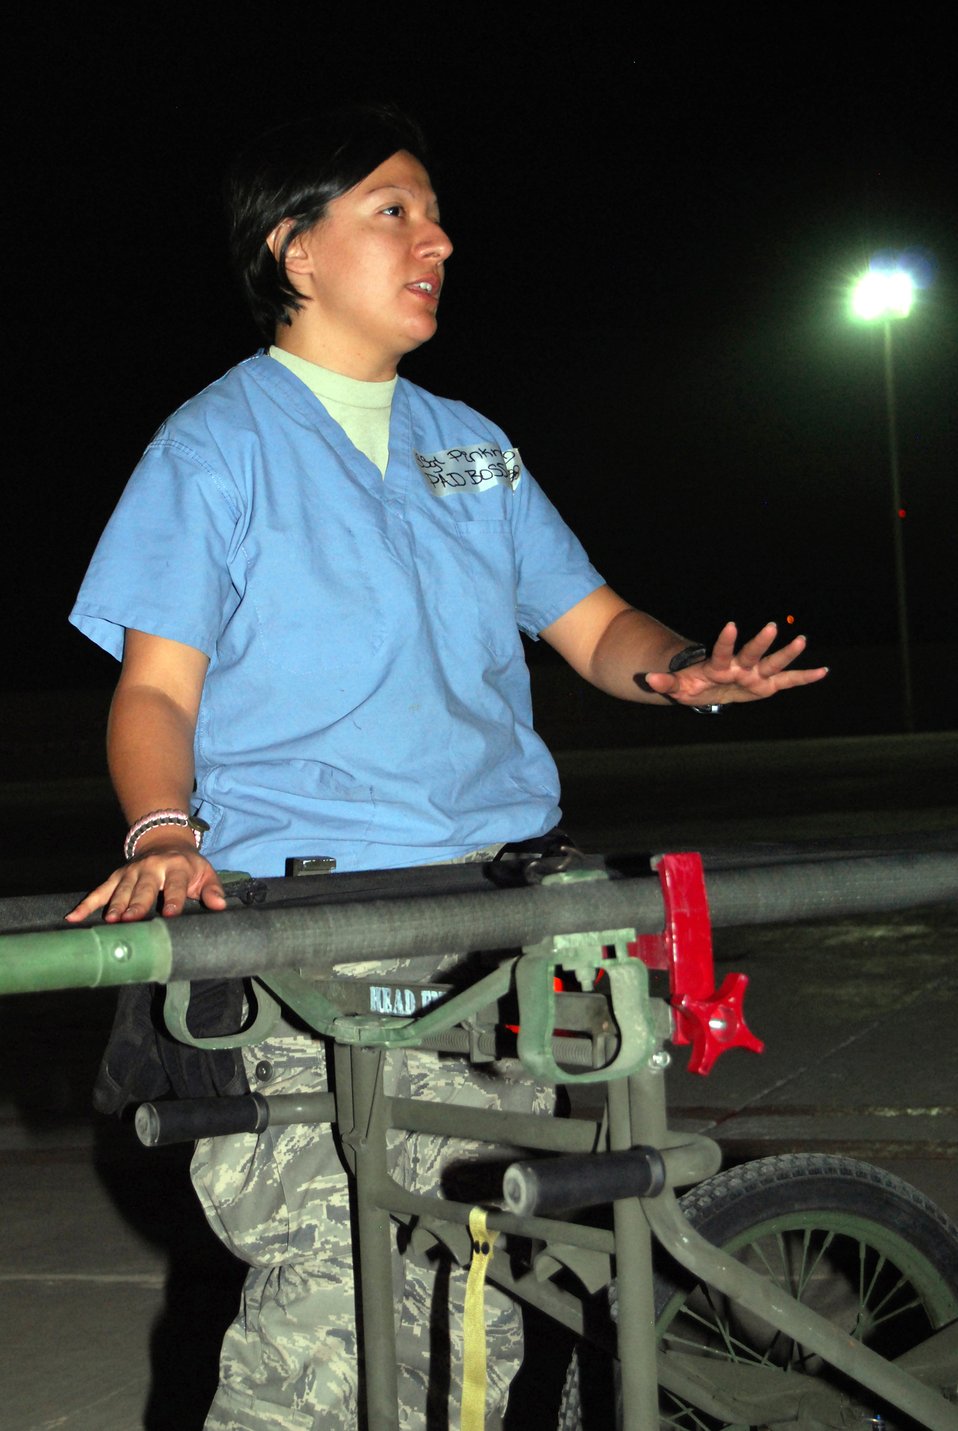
Volunteers form critical link in the 'care chain'

Staff Sgt. Angelica Pinkney explains how to assemble a litter and gurney during Patient Administration and Disposition volunteer training at Joint Base Balad, Iraq, Oct. 22. More than 30 first-time volunteers attended the class, which teaches them to safely transfer patients from UH-60 Blackhawk helicopters into the Air Force Theater Hospital emergency room. Sergeant Pinkney, the night PAD boss for the 332nd Expeditionary Medical Support Squadron and a native of Freeport, Texas, is deployed from Wilford Hall Medical Center at Lackland Air Force Base, Texas.